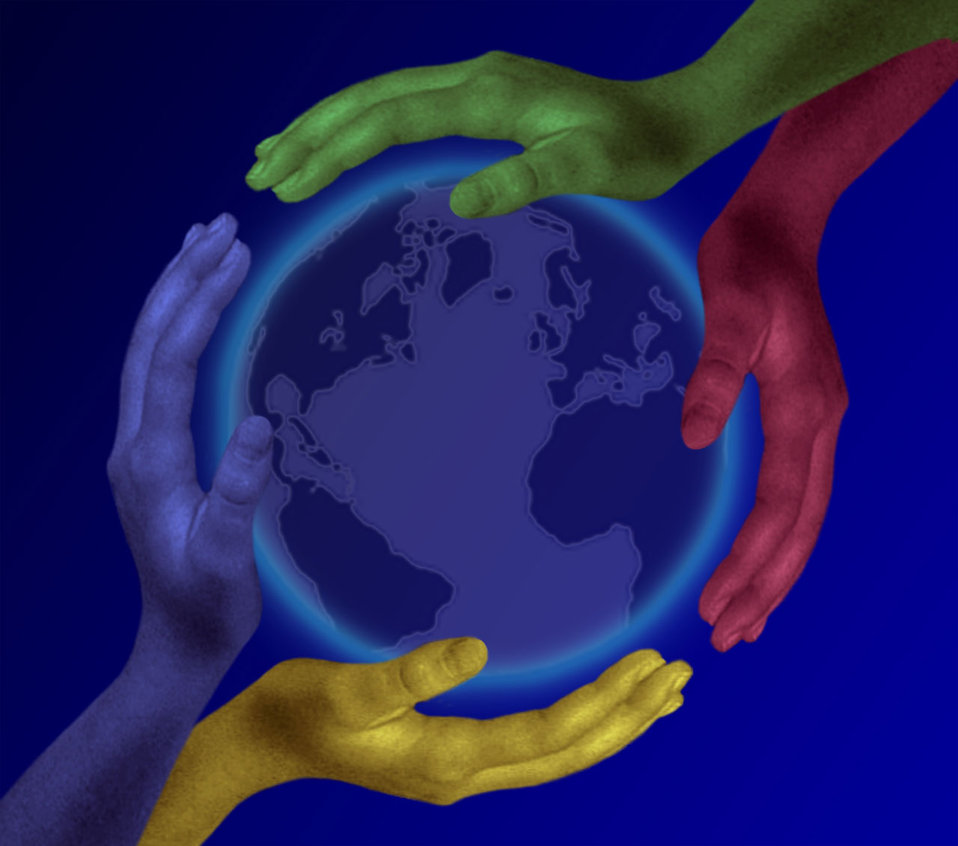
Four hands on planet

Four hands protecting planet earth.